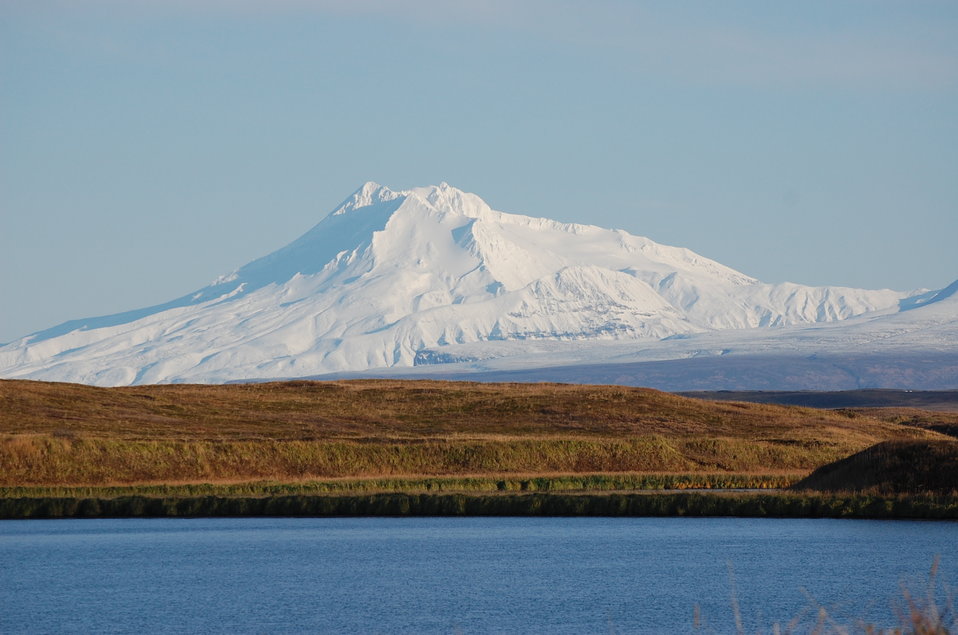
Mount Dutton

Izembek National Wildlife Refuge